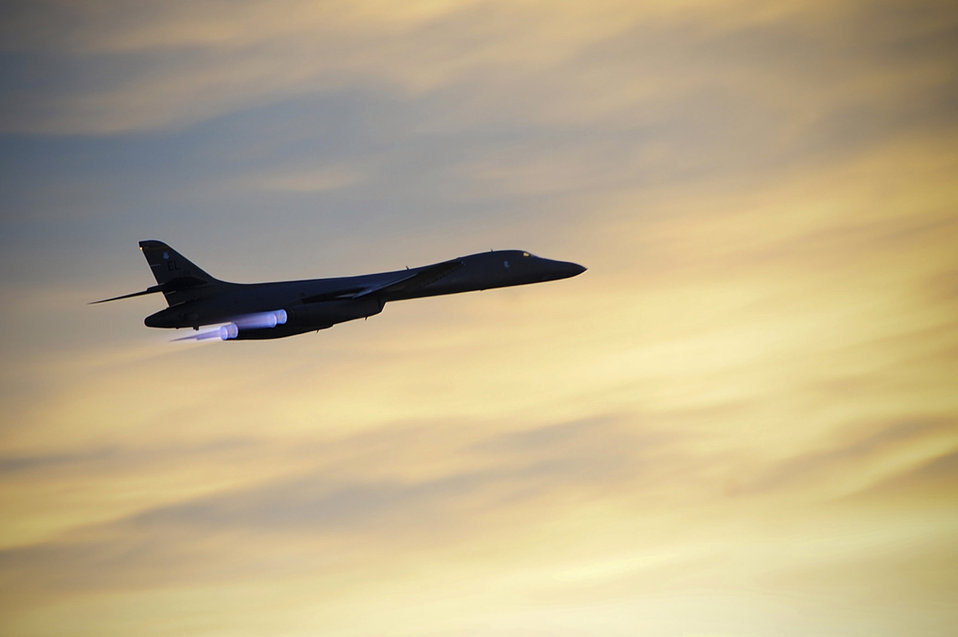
Streaking across the sky

A B-1B Lancer begins a training mission, Aug. 3, 2010, at Ellsworth Air Force Base, S.D. Aircrews complete training sorties to meet certifications and to improve their skills necessary to save lives in combat.